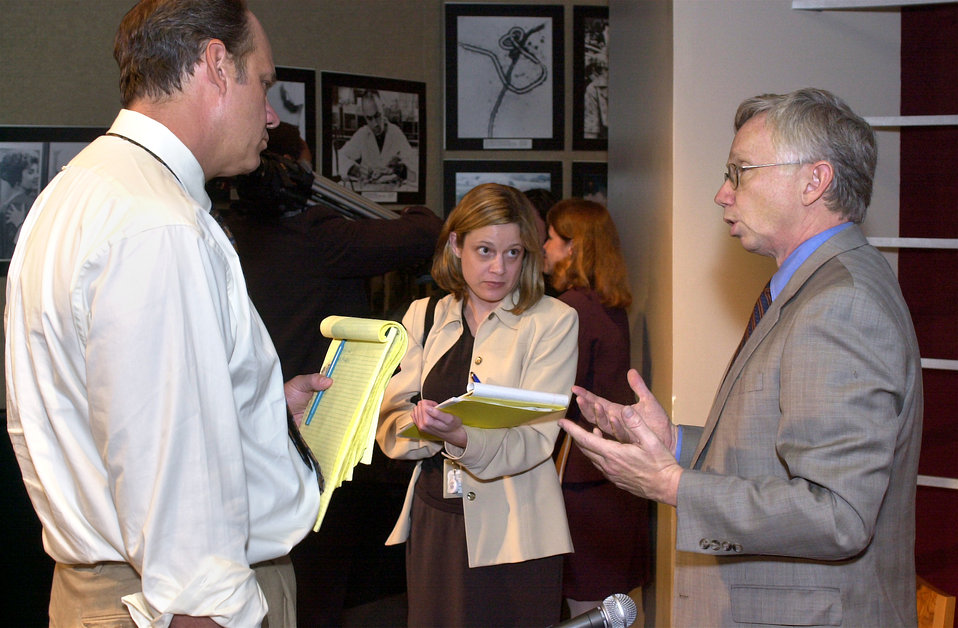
Director of National Center for Environmental Health Richard J. Jackson, MD, MPH speaks with reporters during August's Bioterrorism Preparedness Press Briefing.